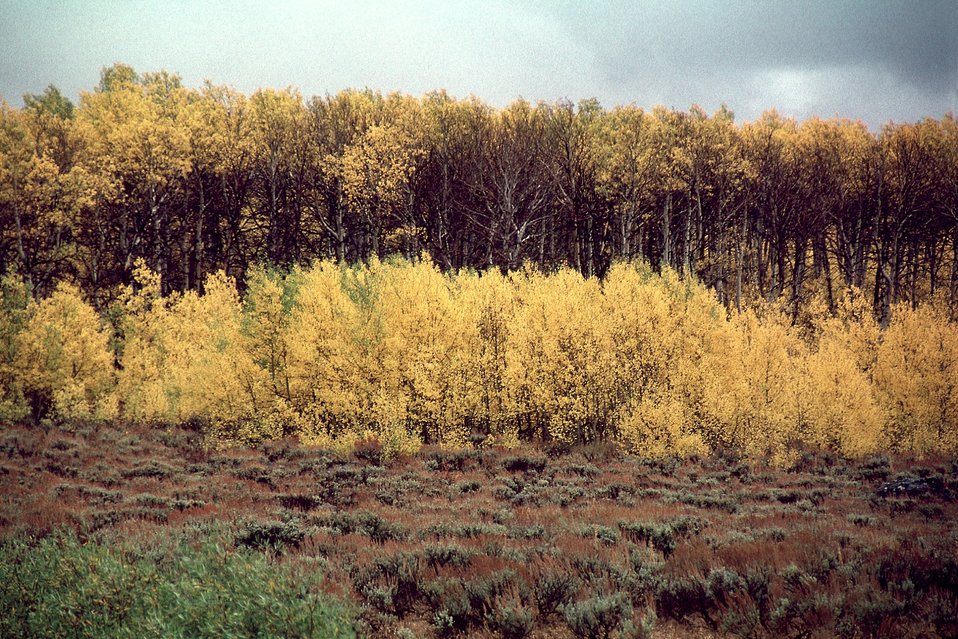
Aspens at Fish Lake, Steen's Mountain.